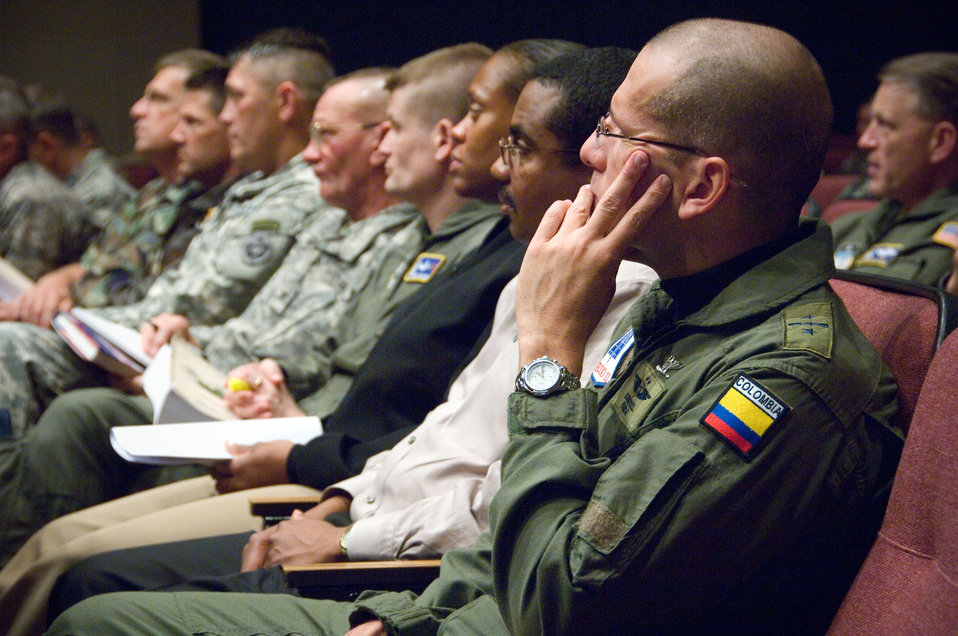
Top officer cites Coast Guard-Air Force ties

Air War College students listen as Adm. Thad Allen, U.S. Coast Guard commandant, speaks about homeland security April 9. The admiral's address was part of the Air War College Distinguished Lecture Series. Under the program, leaders from across a wide range of disciplines, including diplomats and scholars, speak on a regular basis to Air War College students.